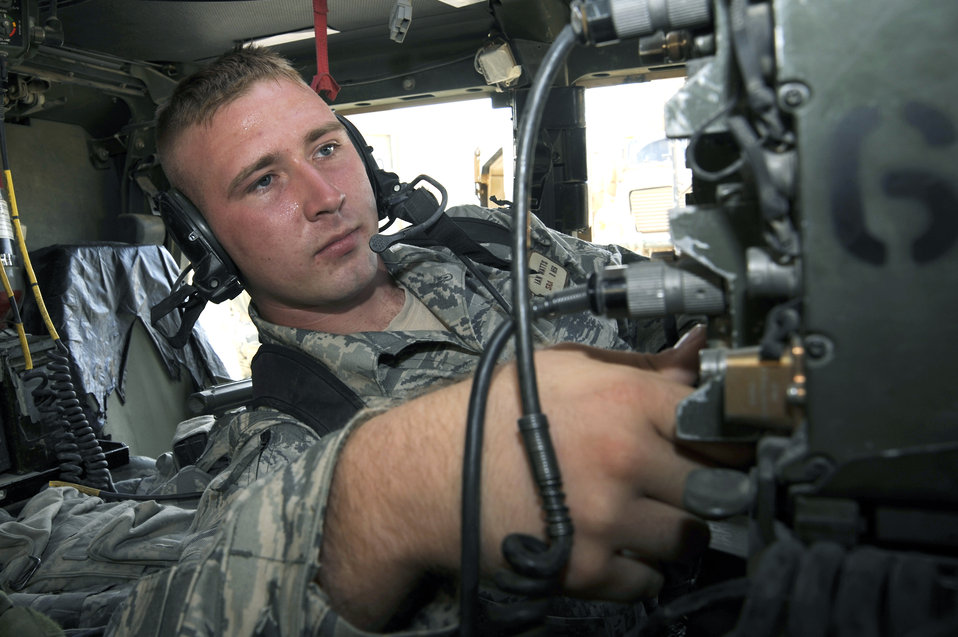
Security forces Airmen help secure future of Iraq

Senior Airman Ian Watts performs radio checks in his Humvee Aug. 22, 2009, at Camp Stryker, Iraq. The checks ensure he will be able to communicate with other vehicles on his security team. Airman Watts is assigned to the 732nd Expeditionary Security Forces Squadron Detachment 2 Police Transition Team and is deployed from Langley Air Force Base, Va. He is a native of Big Timber, Mont.